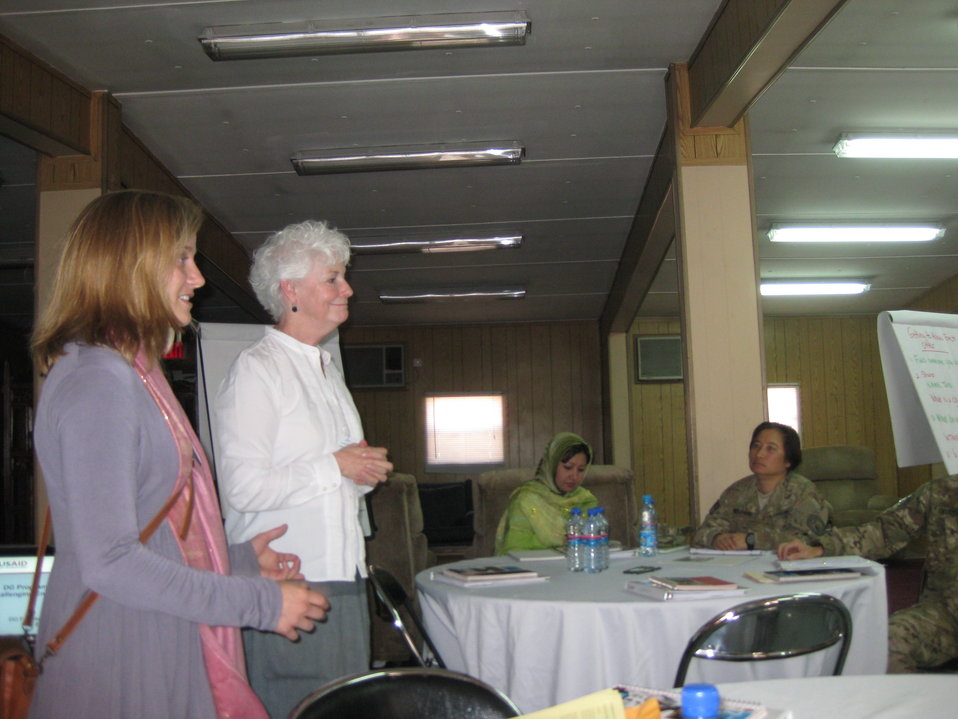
Afghan Youth Voices 018